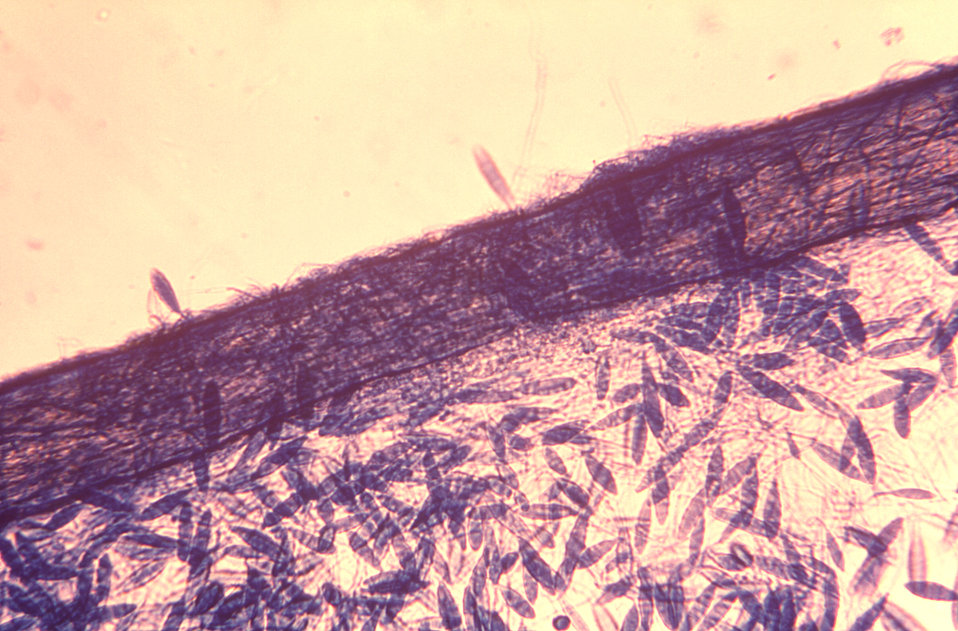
Under a magnification of 200X, this photomicrograph depicted a large number of oblong-shaped Microsporum gypseum macroconidia that were attached to a hair shaft under in vitro conditions. These M. gypseum organisms were derived from a soil isolate that originated in France.